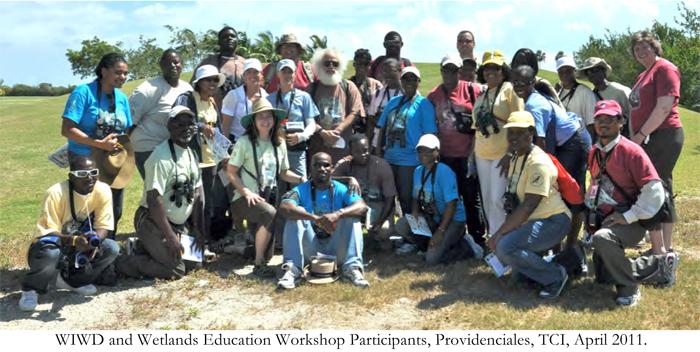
G234 2010 (10)